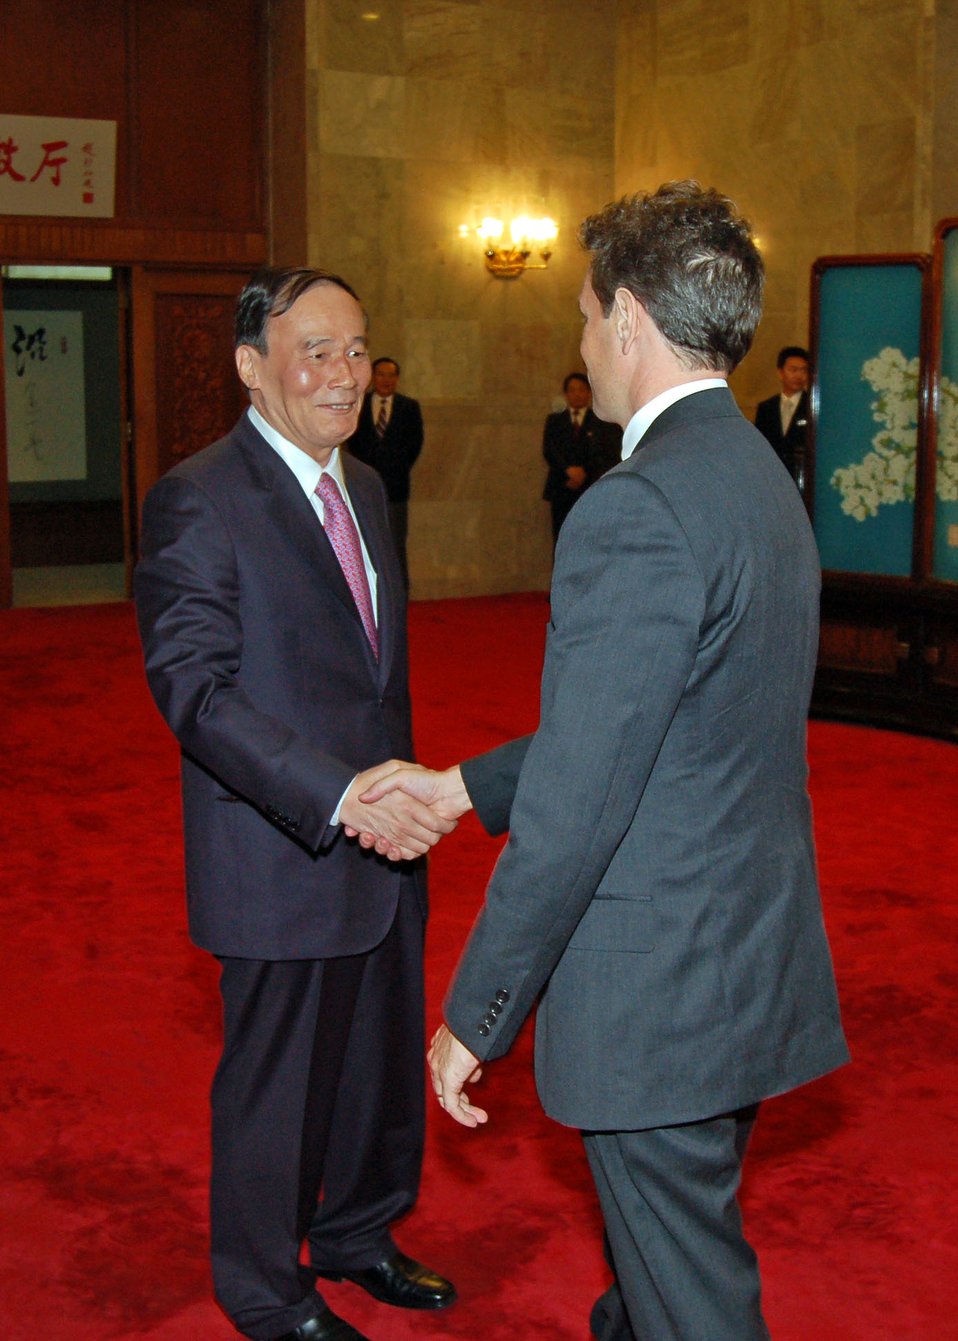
China trip: May 31-July 2 2009

Secretary Geithner meeting Vice Premier Wang Qishan, his counterpart in the U.S.-China Strategic and Economic Dialogue, at the Great Hall of the People.